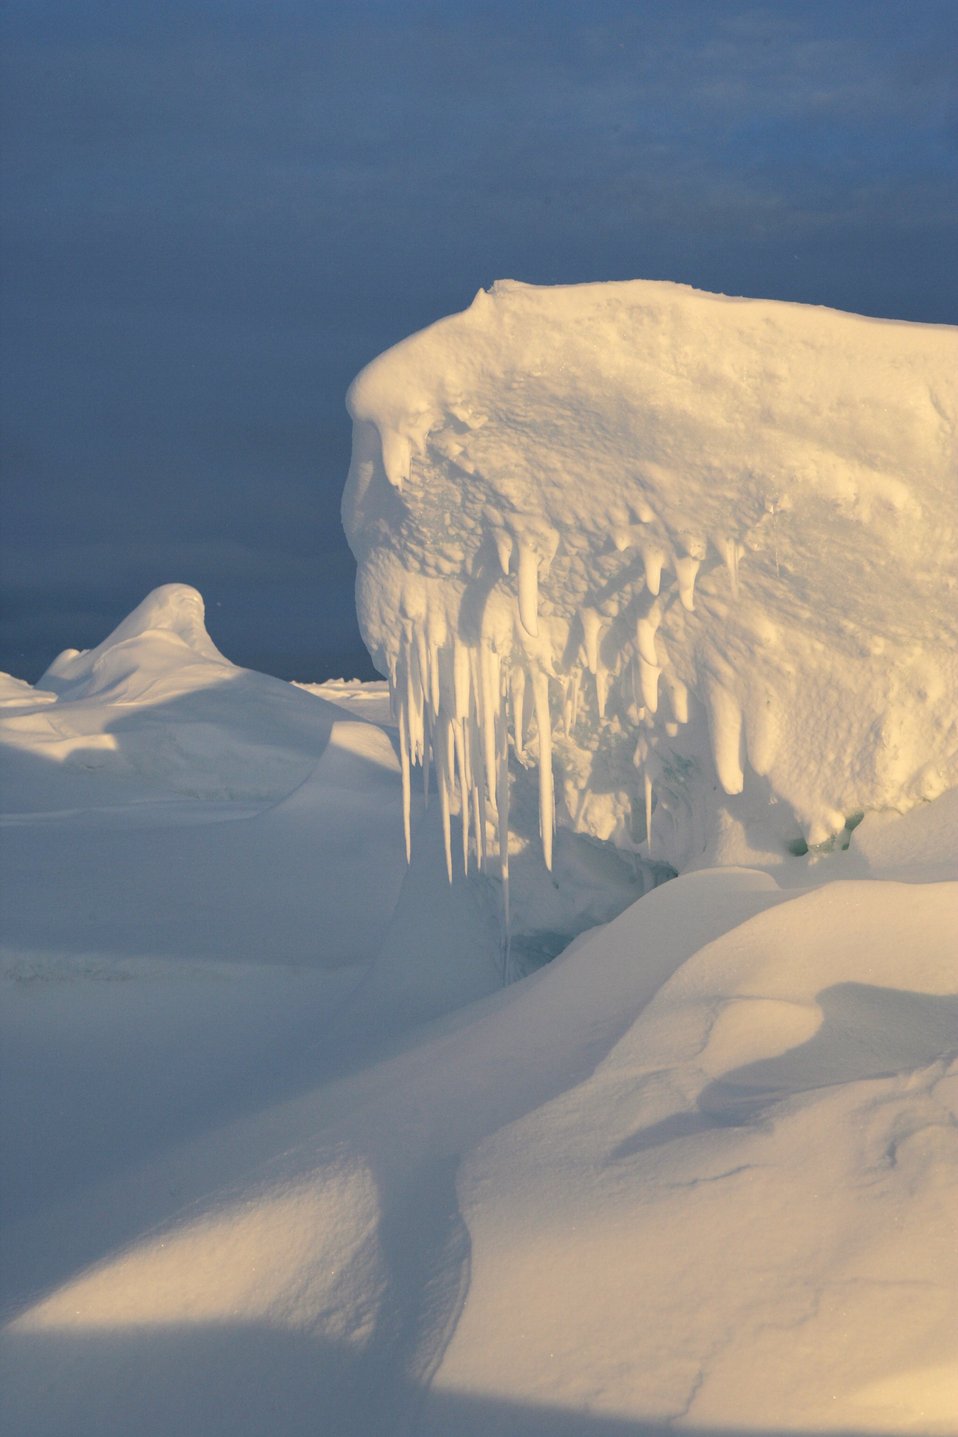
A ridge caused by floes coming together.